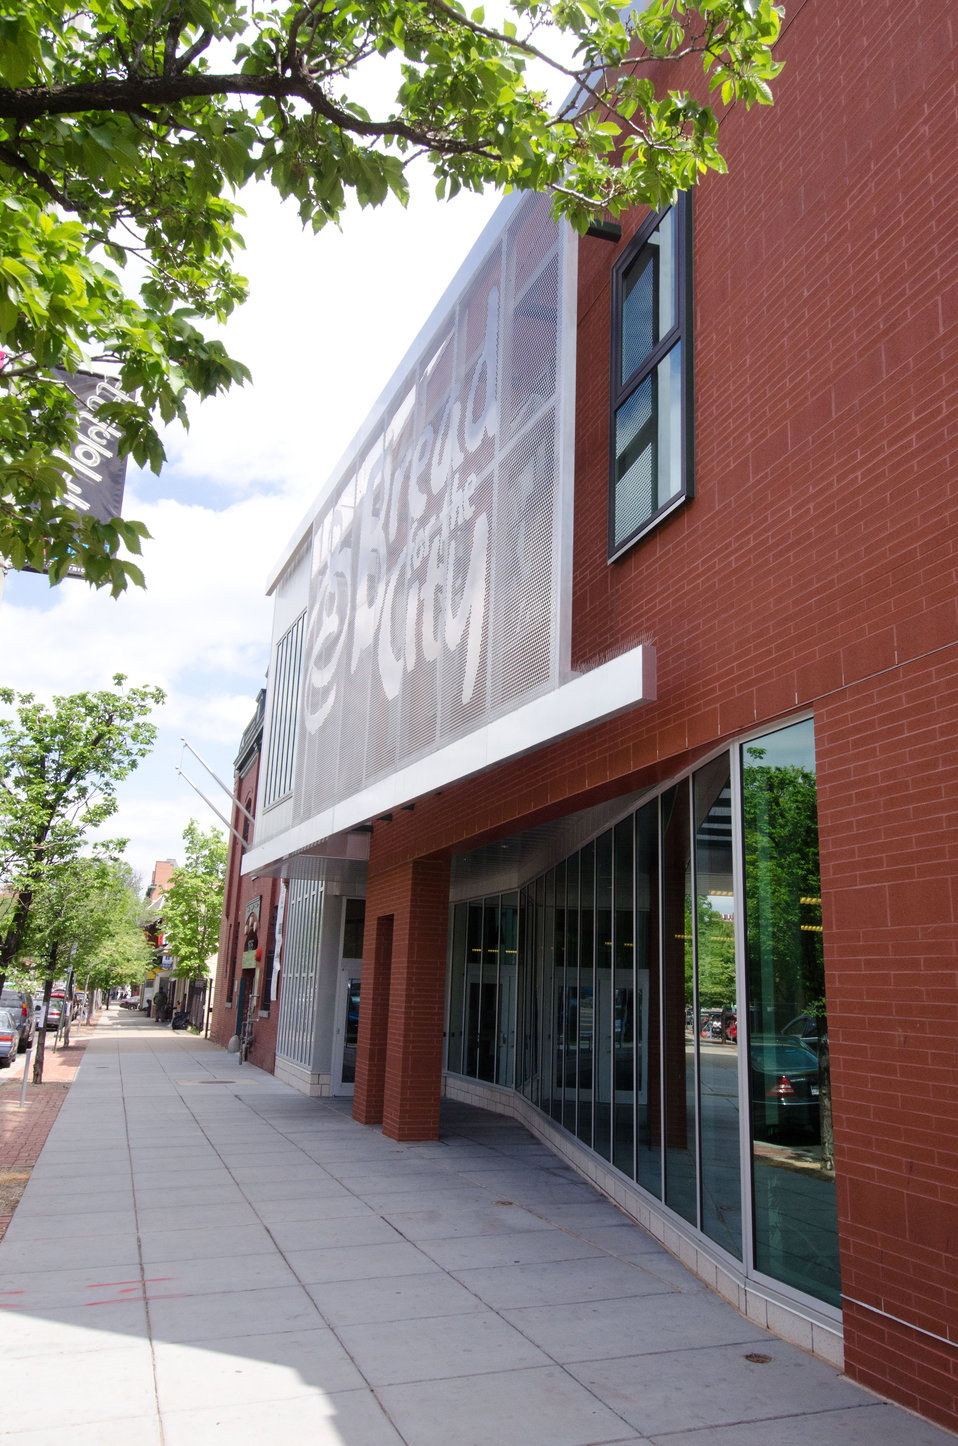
Bread for the City in northwest Washington, DC, on Friday, April 29, 2011.